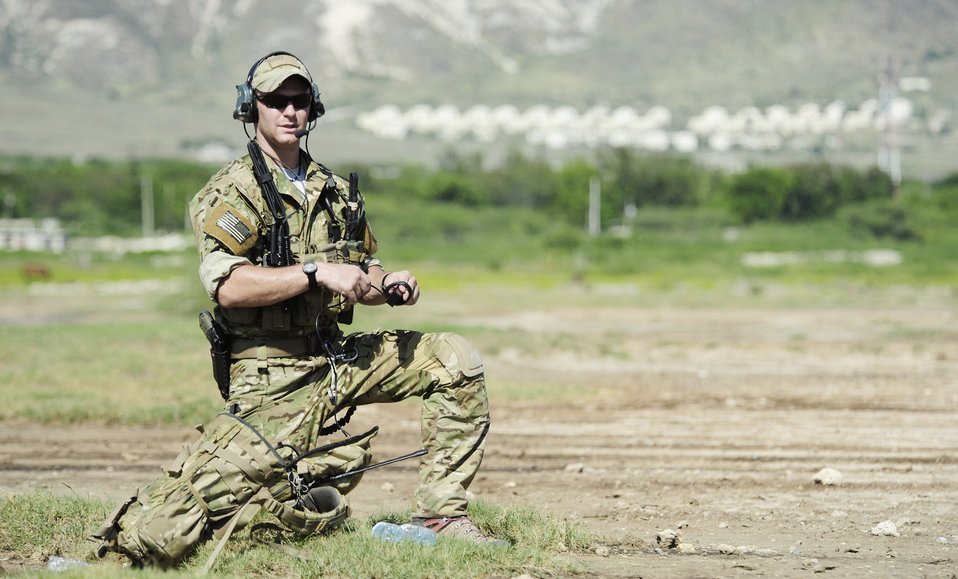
Haiti Earthquake Relief

An Air Force combat controller packs up equipment after an air delivery of humanitarian aid in Port-au-Prince, Haiti, Jan 18, 2010. Department of Defense assets have been deployed to assist in the Haiti relief effort following a magnitude 7 earthquake that hit the city on Jan. 12, 2010. The combat controller is assigned to the 23rd Special Tactics Squadron at Hurlburt Field Fla.